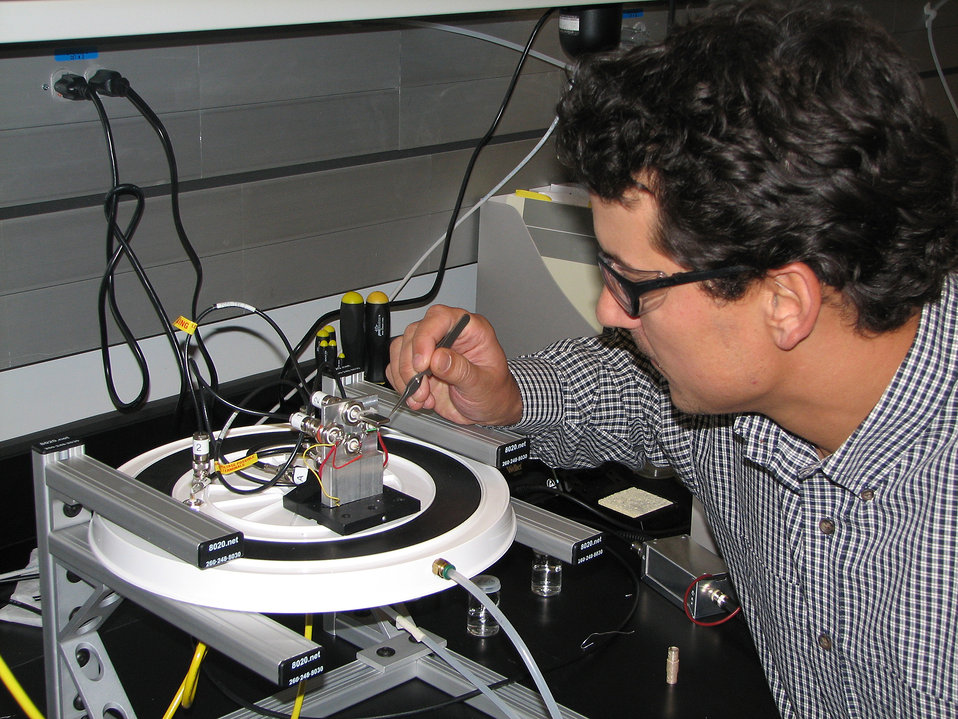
Nanoelectronic Switch

NIST chemist James Kushmerick adjusts test apparatus demonstrating a prototype silver nanoswitch.